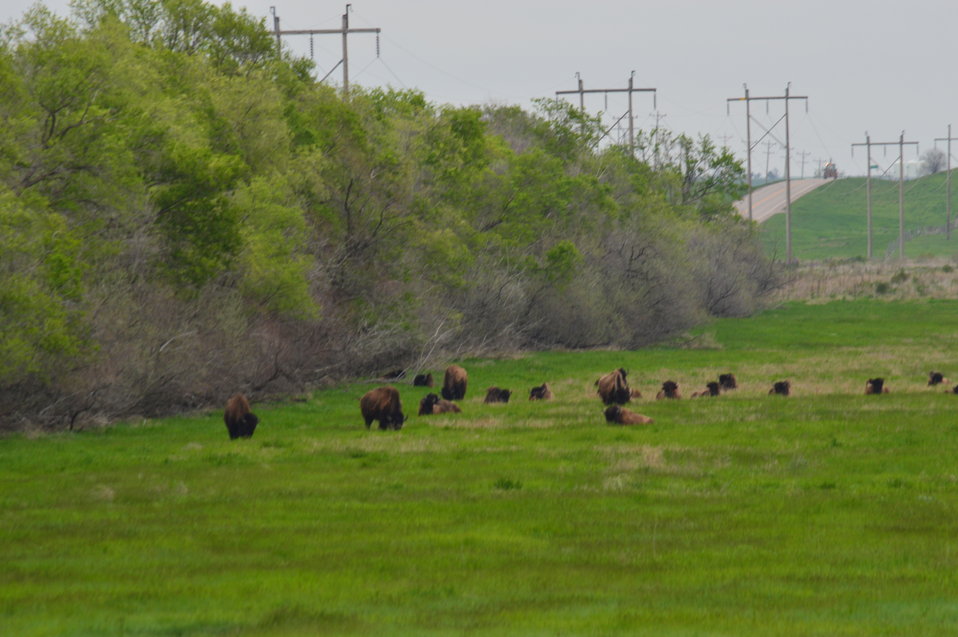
Bison Herd

Scenery and wildlife at Lake Ilo National Wildlife Refuge in North Dakota